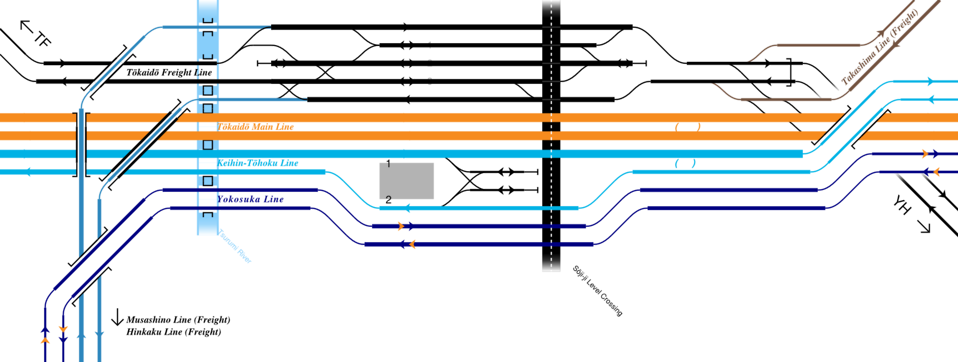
Rail tracks map Tōkaidō Main Line around JR-East Tsurumi Station in Tsurumi-ku, Yokohama, Japan. Reference material: Michitaka Tsuru & Yoshihiro Meguro, 'Introducing the major railway stations in Japan starting from Tokyo Station westwards. No.1', RAILWAY JOURNAL CO.,LTD., 'RAILWAY JOURNAL' (Tetsudō Journal: Japanese Magazine), Vol.40-11 No.481, 2006-11., page 65. Masashi Takahashi, 'Tokyo SOTOKANJŌSEN Junction', DENKISHA KENKYUKAI, 'THE RAILWAY PICTORIAL'(Tetsudō Pictorial: Japanese Magazine) Vol.58-9 No.808, 2008-9, Page 47, Figure 1. 日本語: 横浜市鶴見区にあるJR東日本 鶴見駅周辺の東海道本線関連の鉄道配線略図（鶴見線分は省略）
参考文献： 鶴通孝 目黒義浩、「日本縦断各駅停車 東京から西へ 1」、鉄道ジャーナル社、『鉄道ジャーナル』、第40巻11号（通巻第481号） 2006年11月号、65頁。 高橋政士、「東京外環状線ジャンクション」、電気車研究会、『鉄道ピクトリアル』通巻第808号（第58巻第9号） 2008年9月号 、47頁、図-1。 凡例は駅配線図テンプレートを参照 Français : Plan de voies This vector image was created with a text editor. Its source code might contain additional information or higher level semantics of the topic.